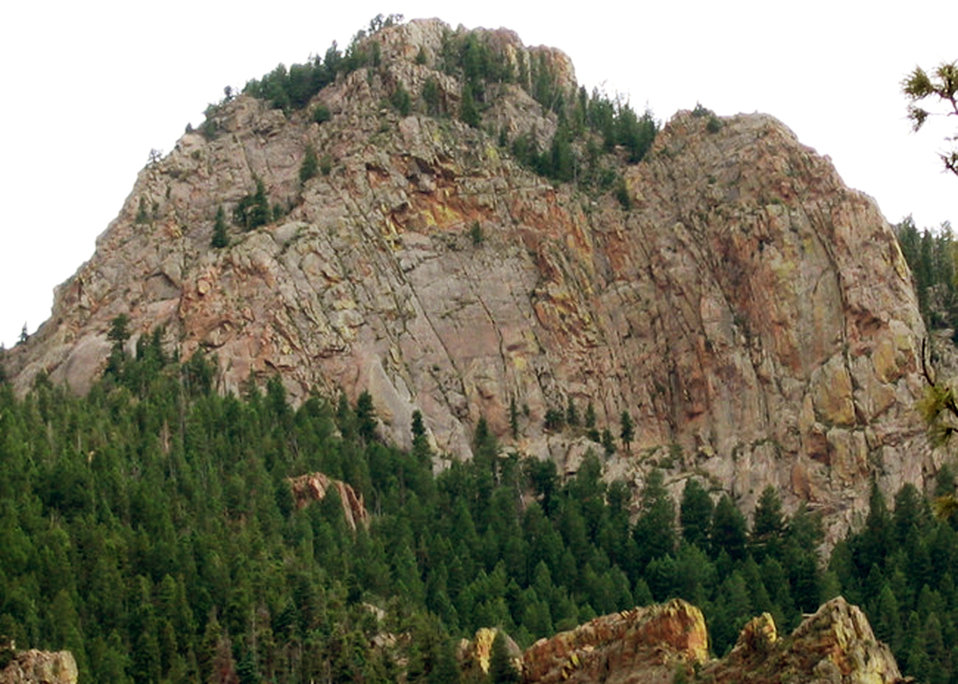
Major learns to get back up after fall

Eagles Peak, a mountain west of the U.S. Air Force Academy, Colo., is where Maj. David Garay survived a 50-foot fall while hiking as a cadet in 1997. Although bones were broken in his face, he tried to climb down to get help. The head trauma he suffered almost cost him his dream of flying for the Air Force, but he overcame it all to become a flight test engineer.